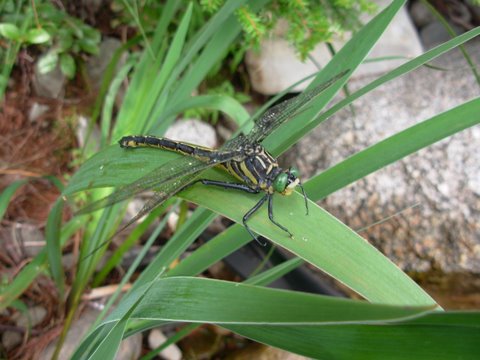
Uploaded by request of Kandis Davis

Taken at East Branch Clifford Lake, Maine

This dragonfly's buddy was eaten by a small mouth bass